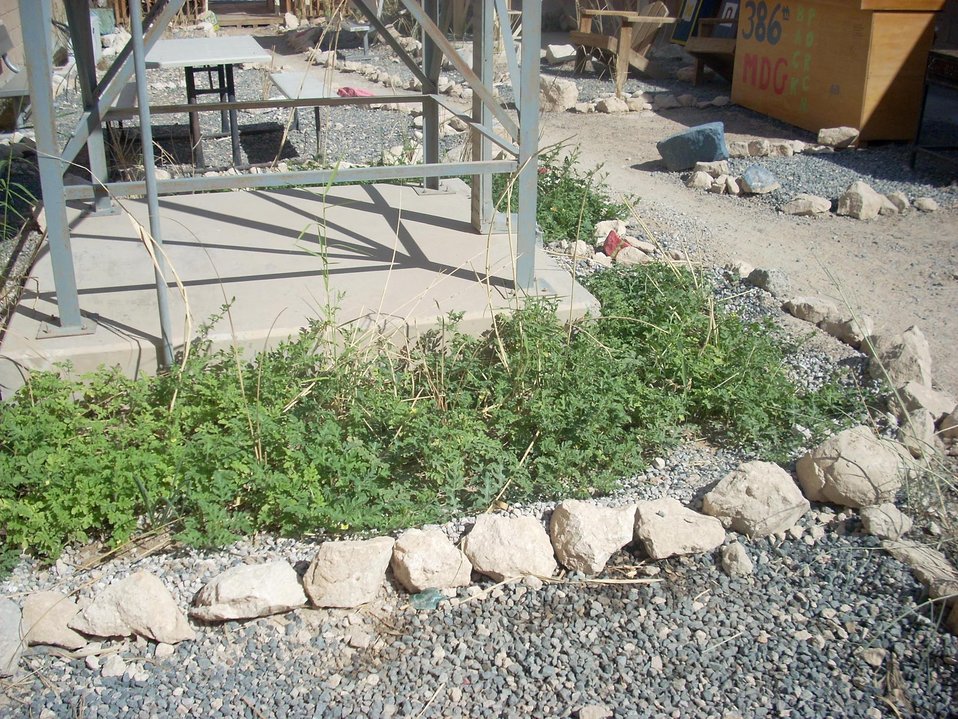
386th EMDG Airmen boast garden oasis

Watermelon plants grow in abundance in the garden patio of the 386th Expeditionary Medical Group in Southwest Asia. Col. Reynold D'Lima turned the patio into a garden. Colonel D'Lima is a provider assigned to the 386th EMDG.